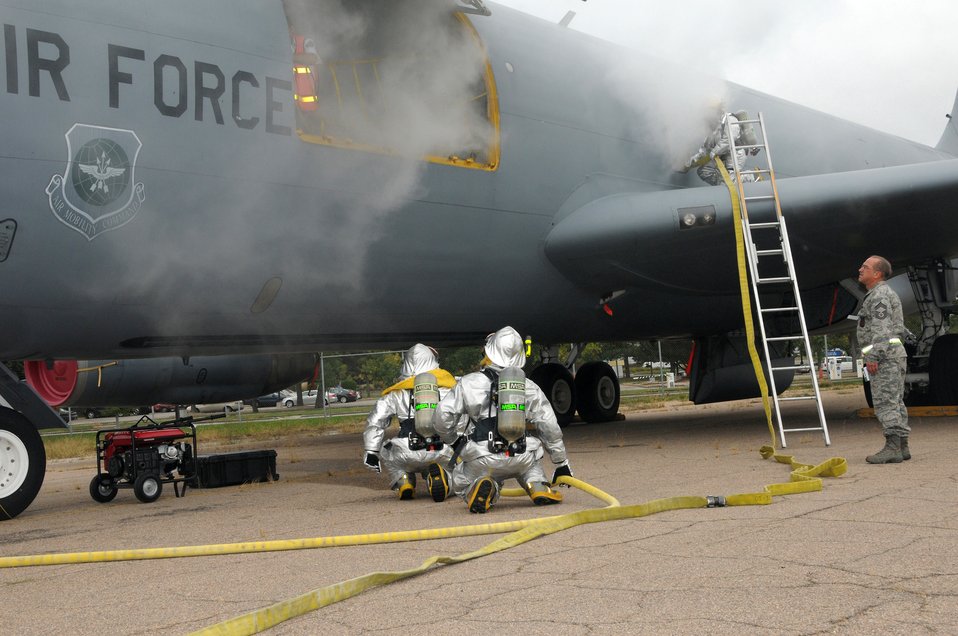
Follow the smoke

Fire and rescue team members of the Nebraska Air National Guard's 155th Air Refueling Wing participate in an egress exercise during a compliance inspection Sept. 18, 2010, at Lincoln Air National Guard Base.